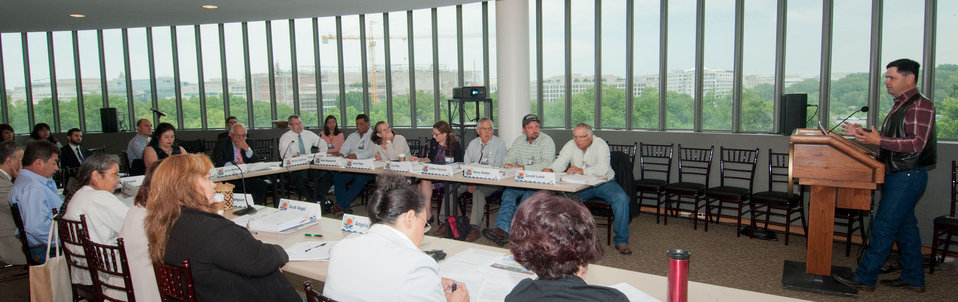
U.S. Department of Agriculture (USDA) Office of Tribal Relations (OTR) and the Intertribal Agriculture Council (IAC) Program Manager Zach Ducheneaux speaks at the first business meeting and public comment session of USDA's Council for Native American Farming and Ranching (CNAFR), held on Tuesday, Aug. 14, 2012 at the National Museum of the American Indian, in Washington, D.C. CNAFR was created to advise the Secretary on ways to eliminate barriers to participation for Native American Farmers and Ranchers in USDA programs. The Council was established as part of the Keepseagle settlement, and is conducted under the oversight of USDA's Office of Tribal Relations, which is part of the Office of the Secretary of Agriculture. The Director of Tribal Relations Joanna Mounce Stancil serves as Designated Federal Official (DFO) for the Council.